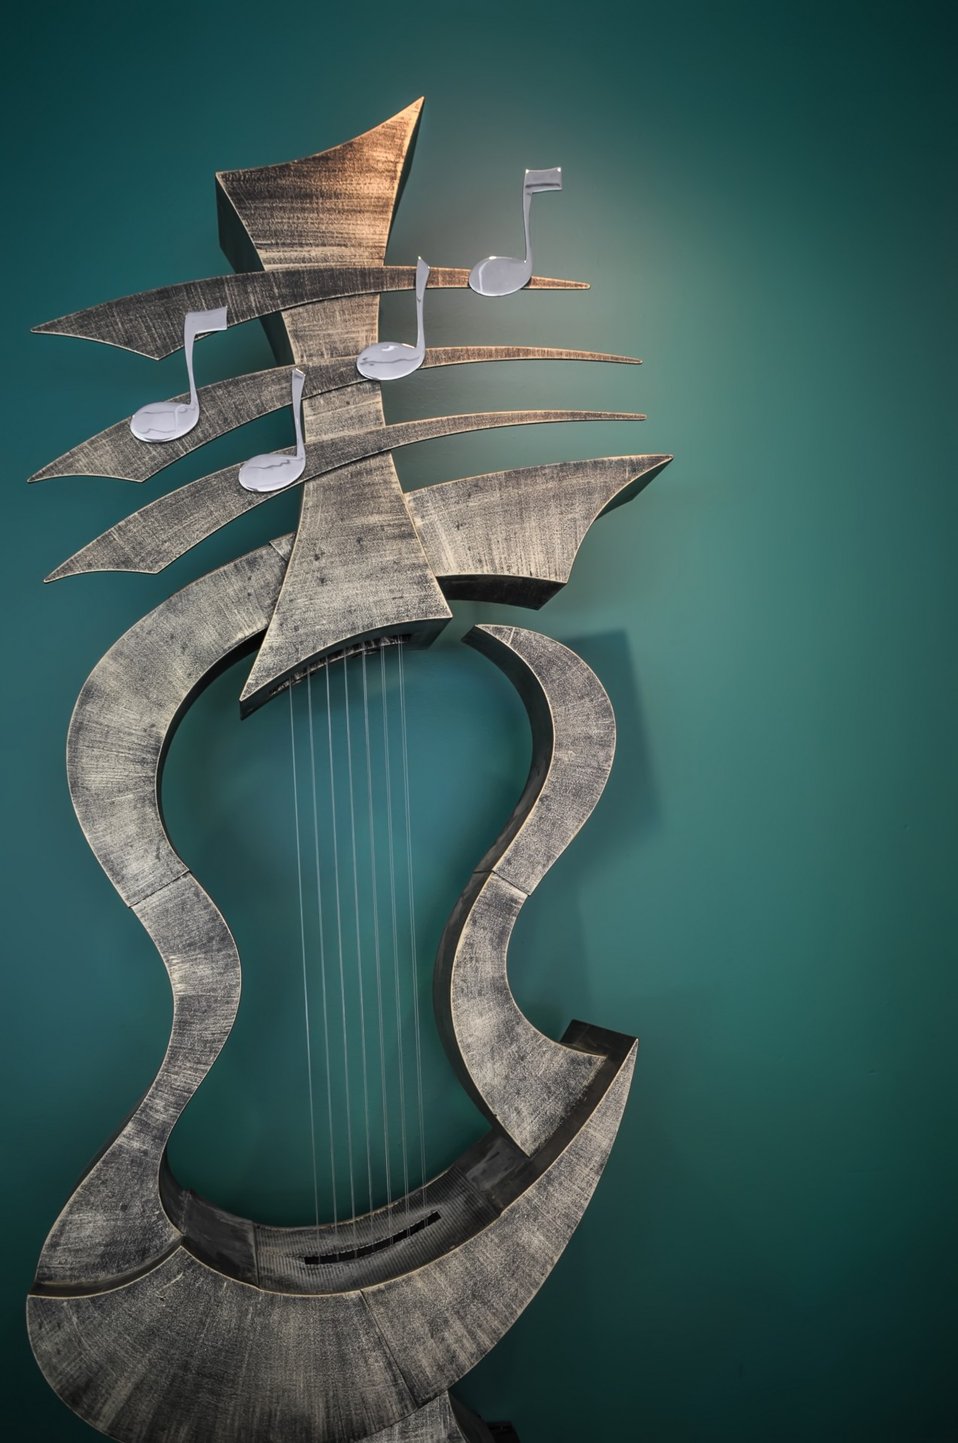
Musical instrument sculpture.